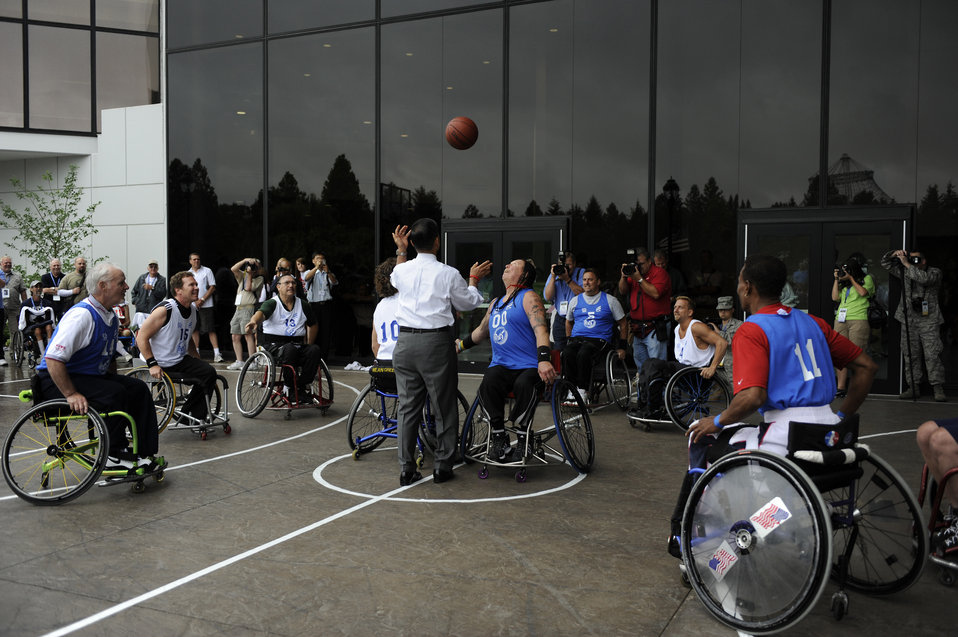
Veterans wheelchair games kick off

Secretary of Veterans Affairs Eric K. Shinseki throws the basketball tip off during the games kick off July 13 for the 29th National Veterans Wheelchair Games held in Spokane, Wa. More than 500 veterans meet at the convention center to take part in the 2009 National Veterans Wheelchair Games July 13 through 19.